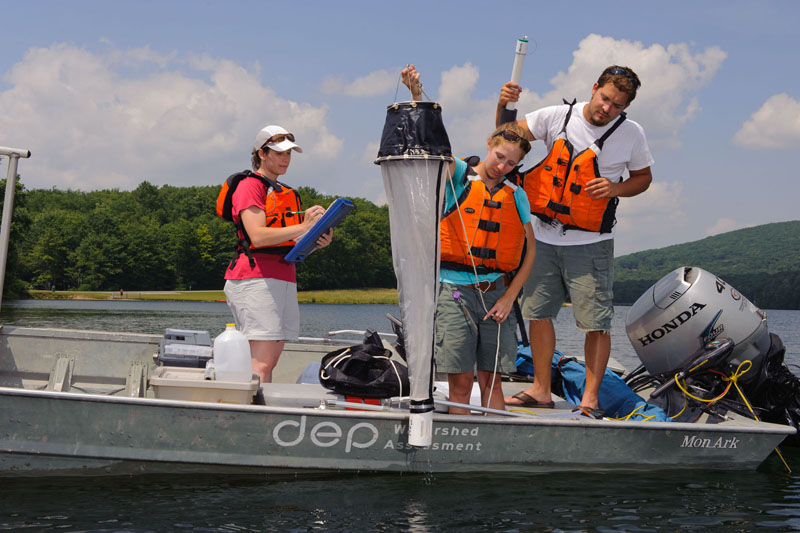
Sarah Kuhn, WVDEP, lowers net to sample zooplankton. Eric Gladwell and Kelly Krock observe. 2013 USEPA photo by Eric Vance